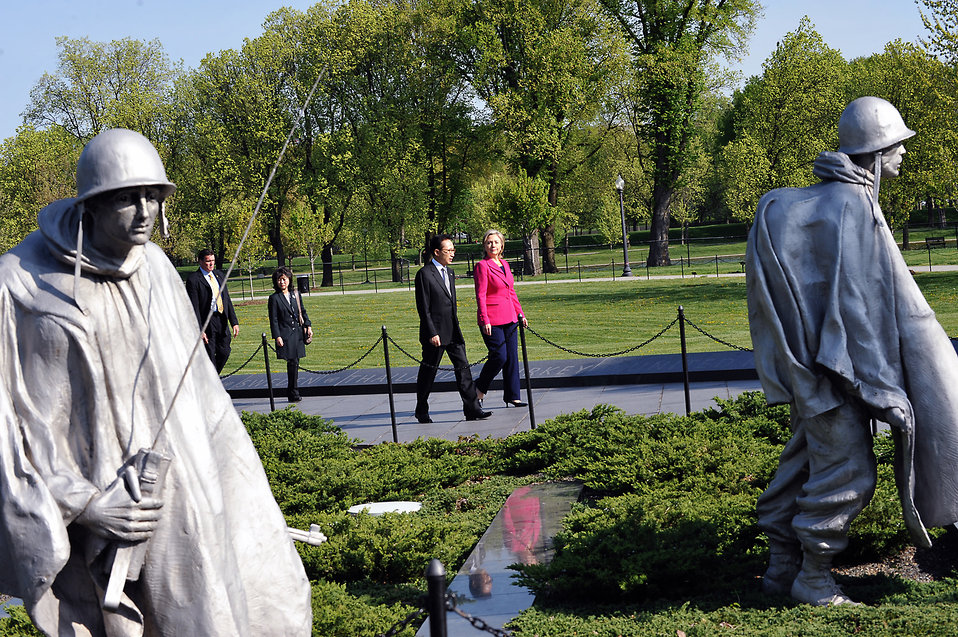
Secretary Clinton Marks 60th Anniversary of the Korean War

U.S. Secretary of State Hillary Rodham Clinton participates in a wreath laying ceremony with Korean President Lee Myung-bak on the 60th Anniversary of the Korean War, at the Korean War Memorial in Washington, DC April 12, 2010.